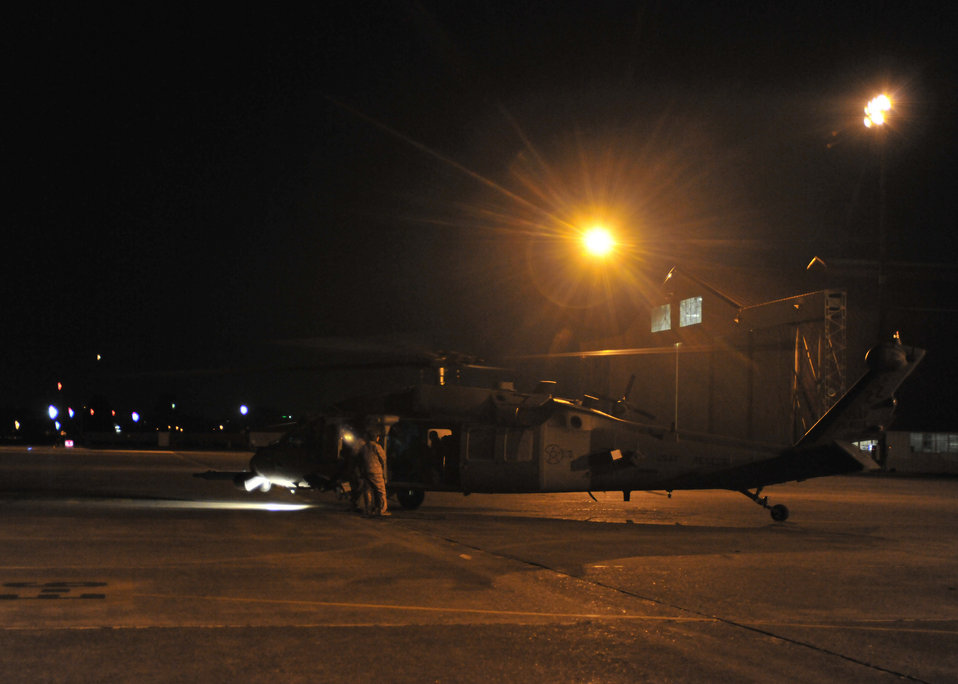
Staging relief

A U.S. Air Force HH-60G Pave Hawk helicopter from Kadena Air Base, Japan, arrives at Yokota Air Base, Japan, March 12, 2011, as part of the first wave of American disaster relief forces and aircraft to assist with Japan's earthquake and tsunami recovery effort.